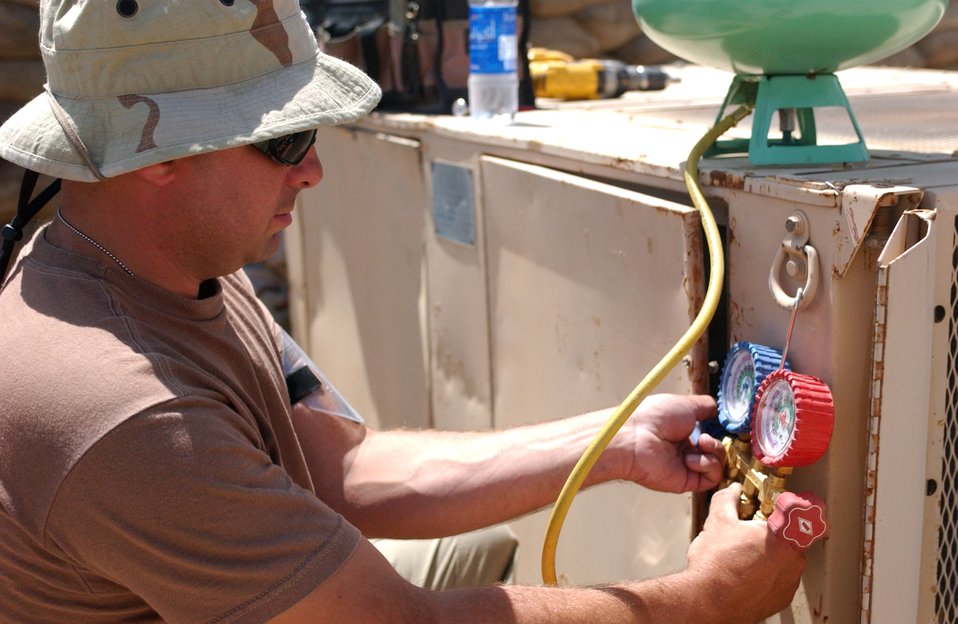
HVAC: Keeping you cool

Staff Sgt. Steven Reed checks the Freon level in an environmental conditioning unit at Ali Base, Iraq. Sergeant Reed is with the 407th Expeditionary Civil Engineer Squadron heating, ventilation and air conditioning flight. He is deployed from the Indiana Air National Guard's 122nd Fighter Wing.